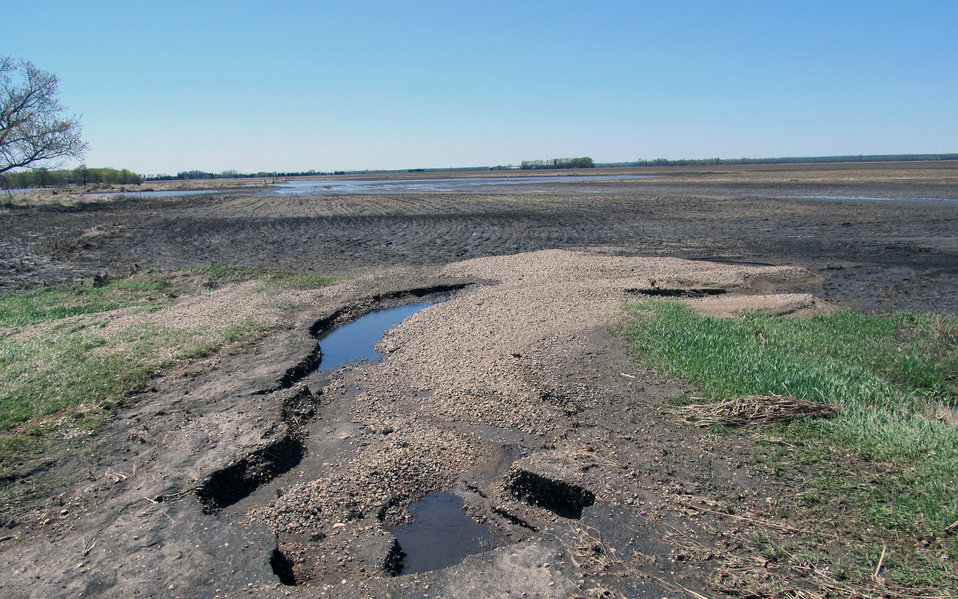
Flooding and water damage in the Park and Tongue River Watersheds located in Cavalier, Pembina and Cavalaier Counties in ND on Thursday, May 23, 2013.